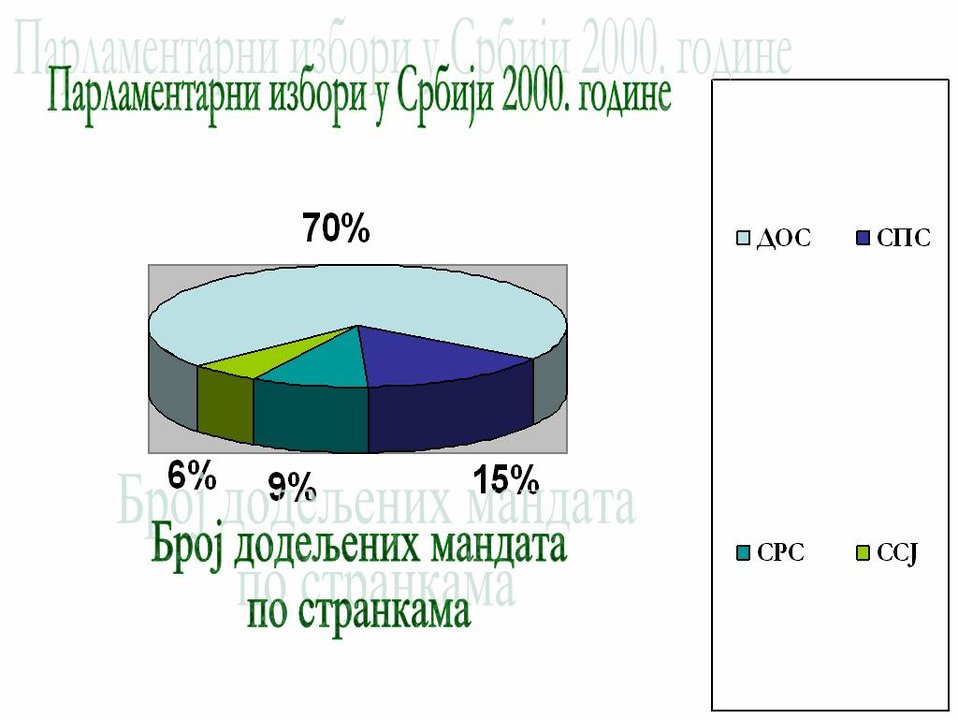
Српски / srpski: Аутор је Видак Раичевић. Распоред мандата по странкама на парламентарним изборима у републици Србији 2000. године.